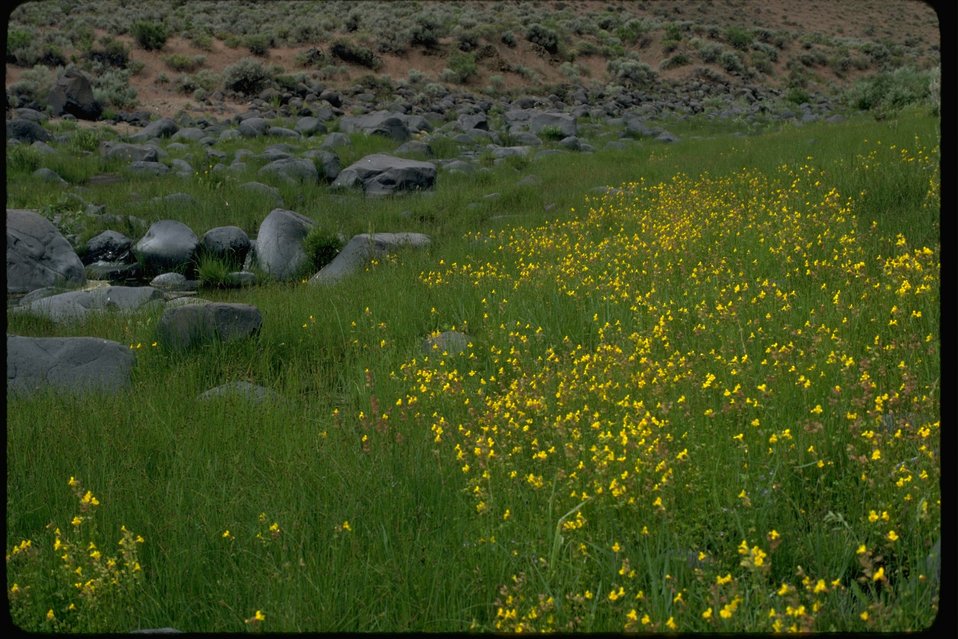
Wildflowers in theDry Creek Wilderness Study Area. OR 3-53